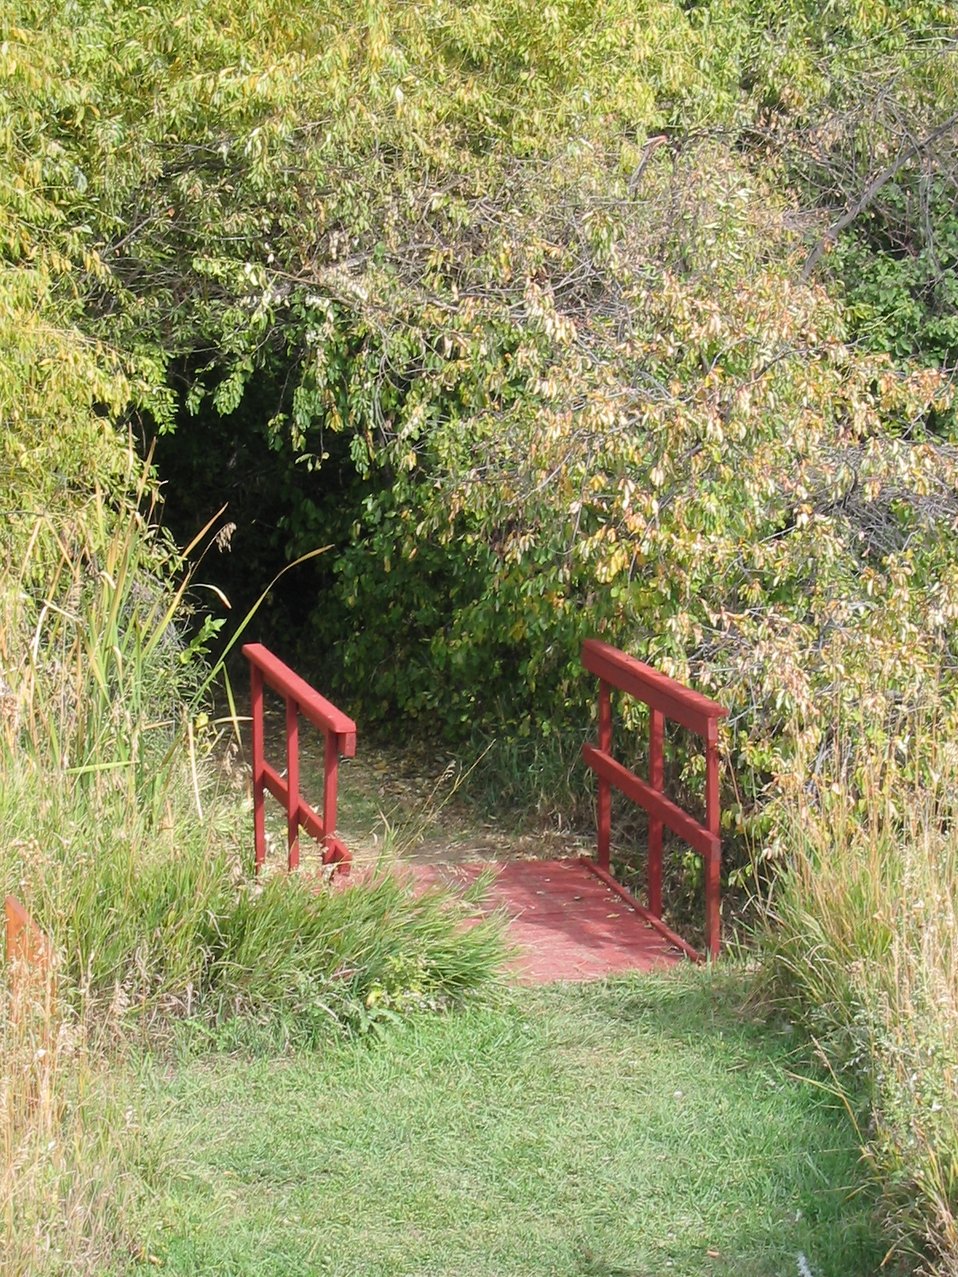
Bridge